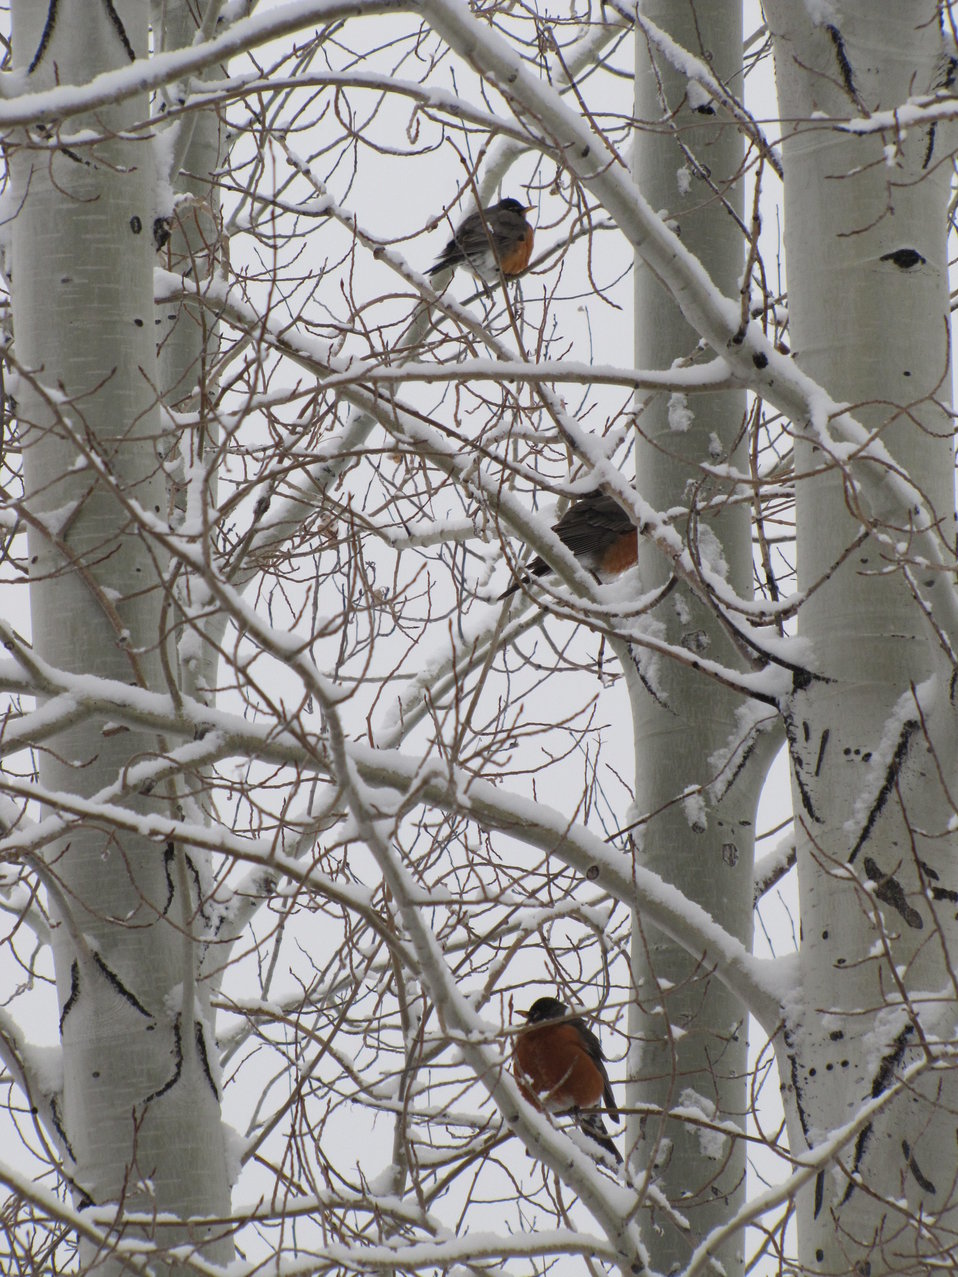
Robins in April

Robins wait out the last in a series of weather systems that affected the Jackson Hole valley during the first week of April. A cold front provided a little extra boost to the snowfall, which had been a rain/snow mix on the valley floor for much of the weekend.